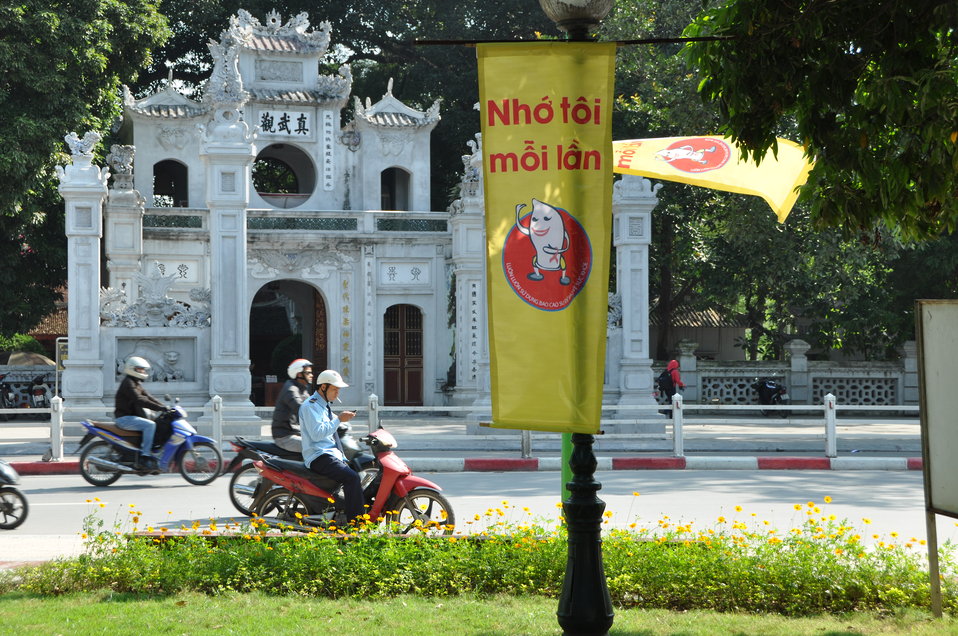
100% Condom Use Campaign Launch, Dec. 2, 2011